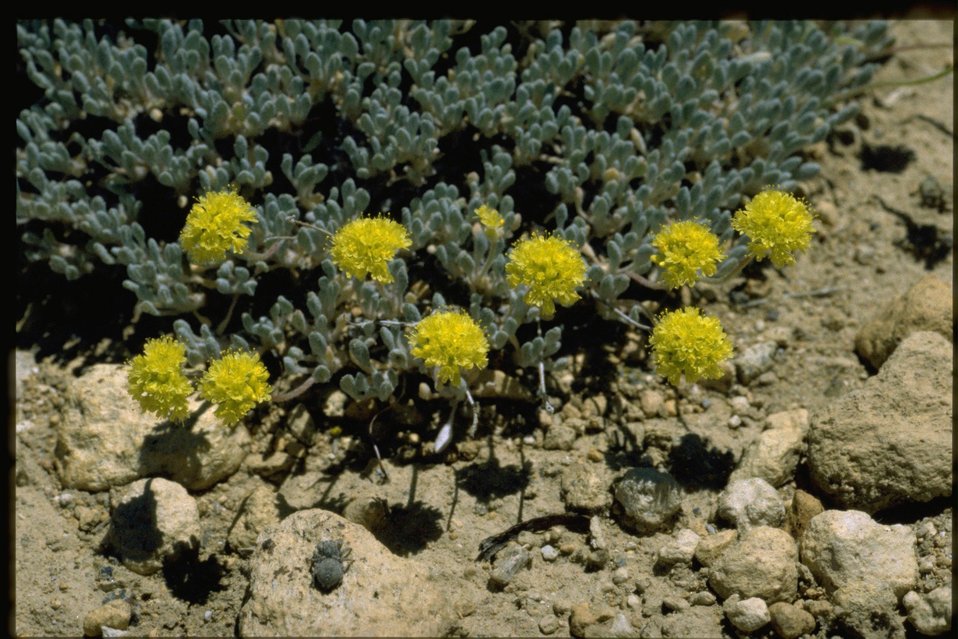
Medium shot of buckwheat habitat.